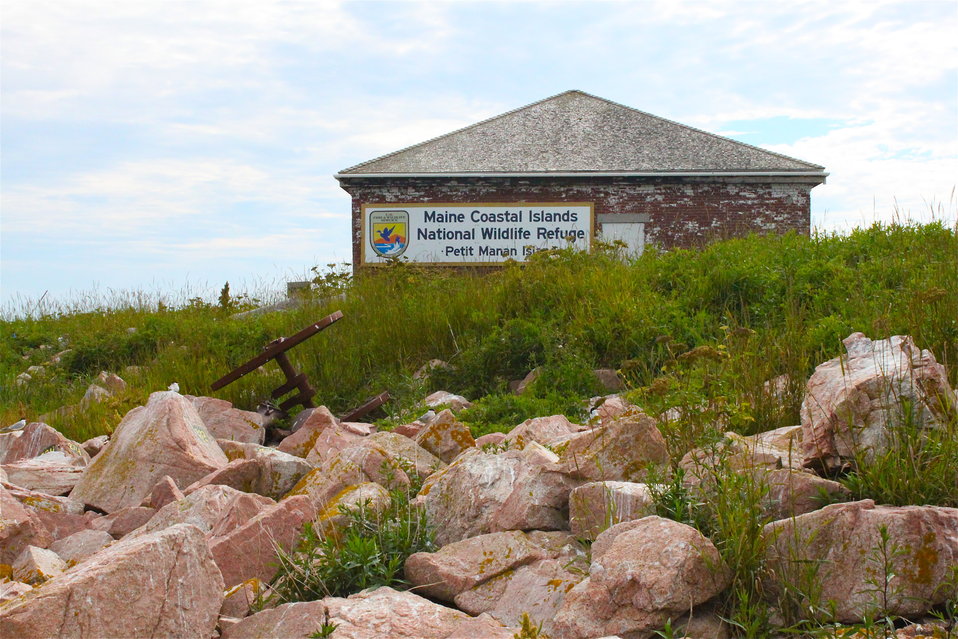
FWS Sign